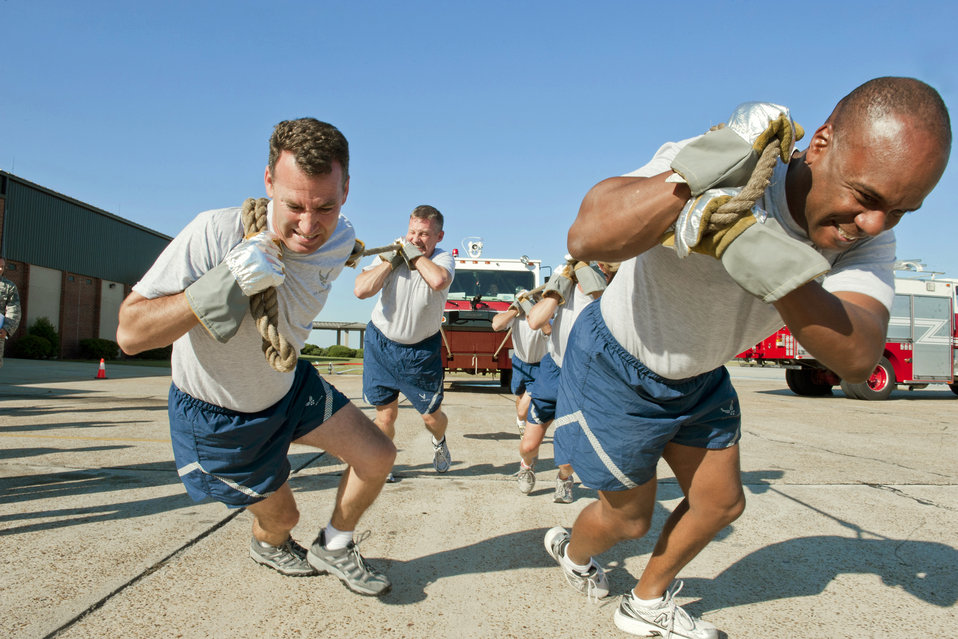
Heave-ho!!

Col. Chad Franks (left), 347th Rescue Group commander, and Col. Neal Robinson, 23rd Maintenance Group commander, lead their team in a P-19 fire truck pull during the annual Fire Prevention Week muster Oct. 4, 2010, at Moody Air Force Base, Ga. The team completed the pull with a time of 7:38, edging out the 23rd Logistics Readiness Squadron fuels management flight team.